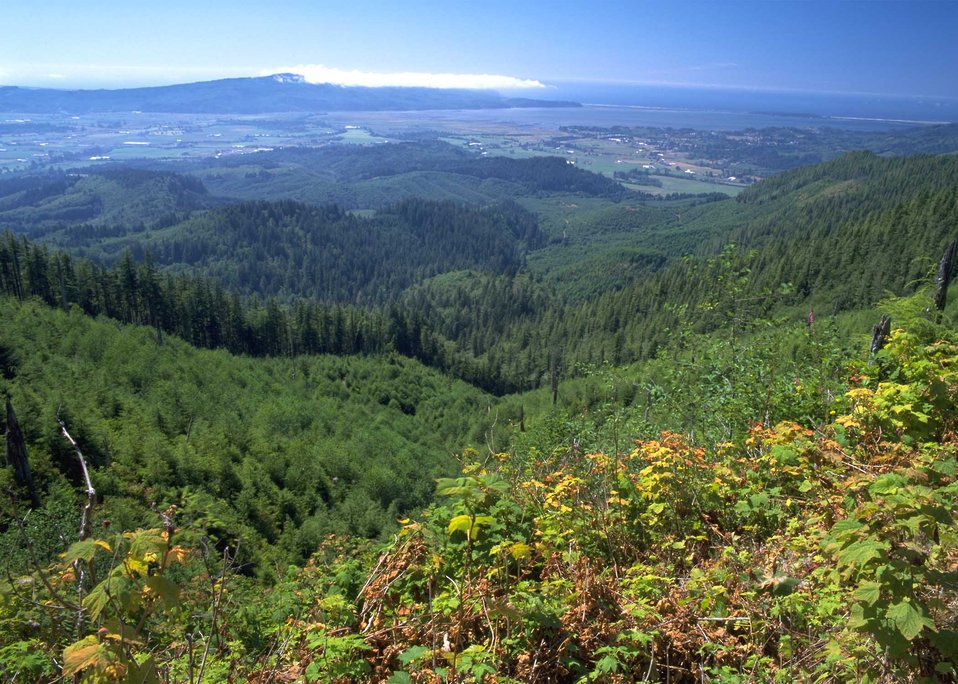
Overview of Tillamook watershed, Tillamook, Oregon.